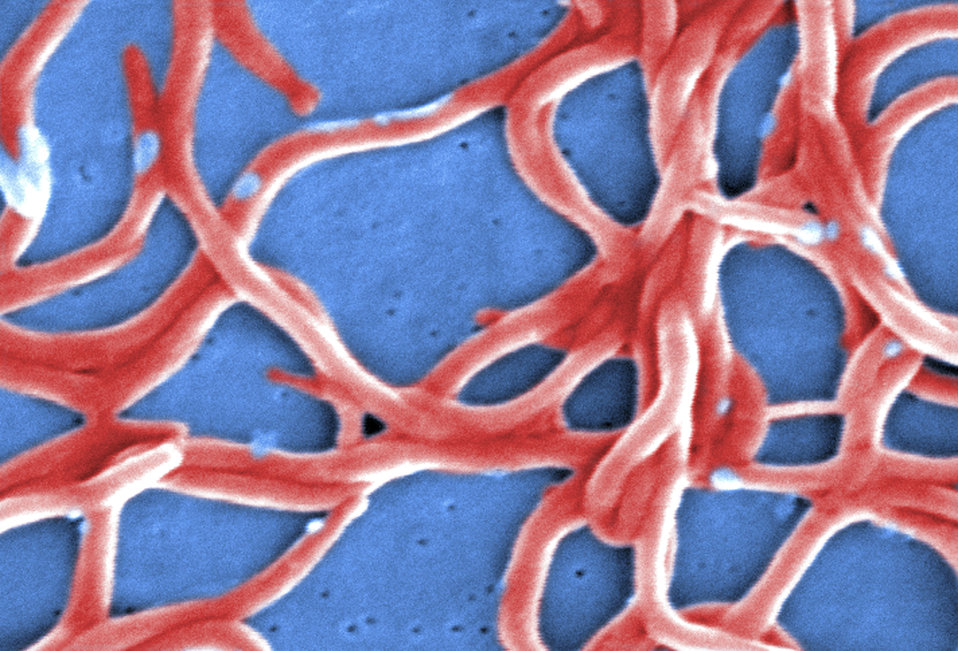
Under a high magnification, this digitally-colorized scanning electron micrograph depicts a grouping of Gram-negative, anaerobic, Borrelia burgdorferi bacteria, which had been derived from a pure culture.